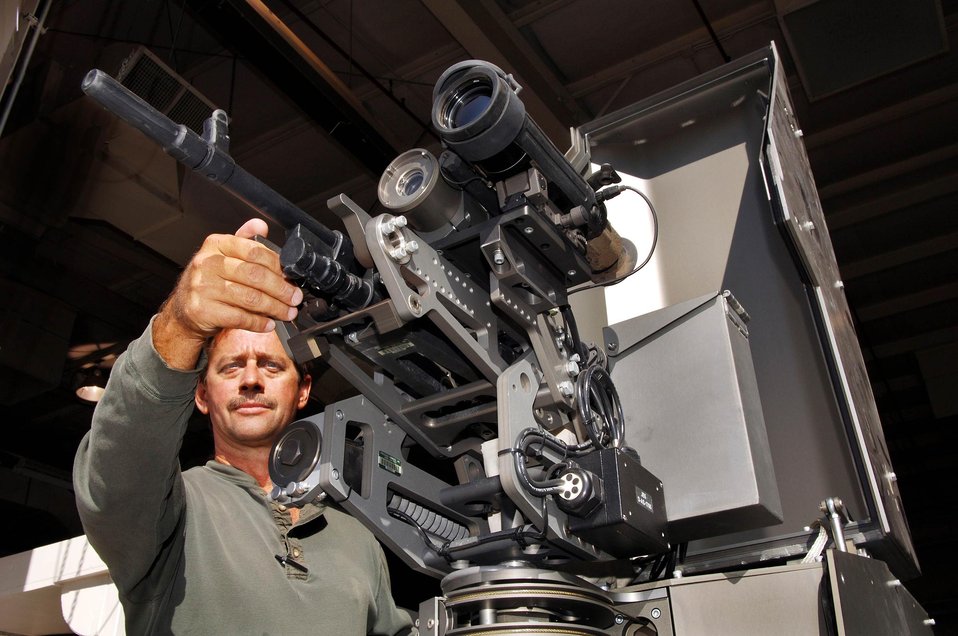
SHOWN IS THE REMOTELY OPERATED WEAPONS SYSTEMS (ROWS)

SANDIA NATIONAL LABORATORY LED THE COMPLETION OF THE ROWS AT OAK RIDGE'S Y-12 PLANT AND A U.S. AIR FORCE INSTALLATION. THIS SYSTEM HAS THE ABILITY TO RESPOND MULTIPLE THREATS AND LOCATIONS FROM ONE COMMAND CENTER AND INCREASE FIREPOWER WITH REDUCED COSTS, WITH ACCURACIES THAT APPROACH AND SOMETIMES EXCEED THOSE OF HUMANS.